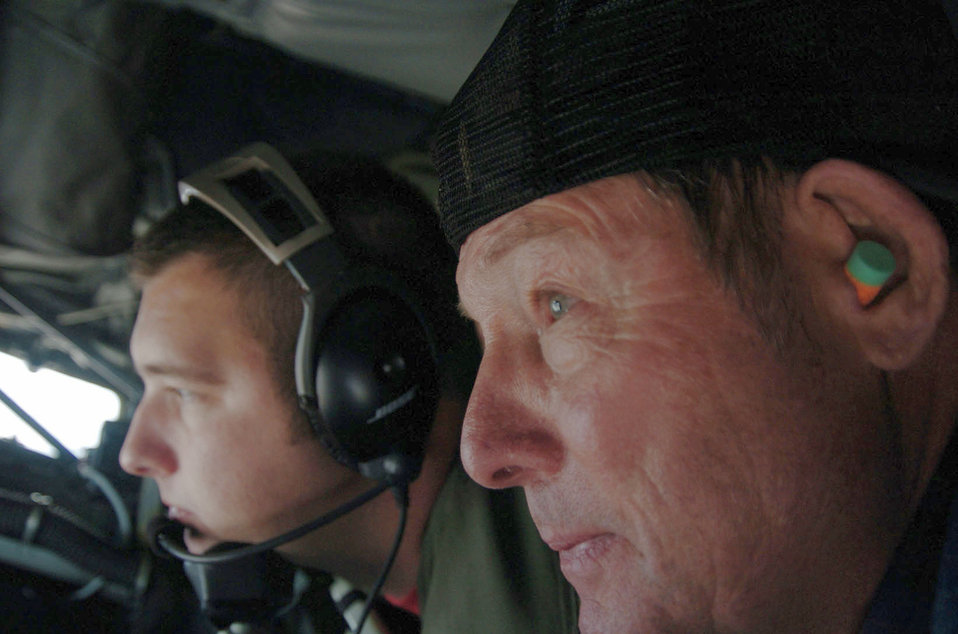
Altus community members spend time in sky

Ronnie McLean of Altus, Okla., observes the refueling of a C-17 Globemaster III from the boom pod of a KC-135 Stratotanker as the boom operator, Staff Sgt. Bruce Bergland, conducts the refueling procedure. Neighbors of Altus Air Force Base, Okla., visited the base Nov. 14 as part of the Farm-City community outreach program. Some of the guests experienced the air refueling mission from the tanker and others from the receiver, the C-17.